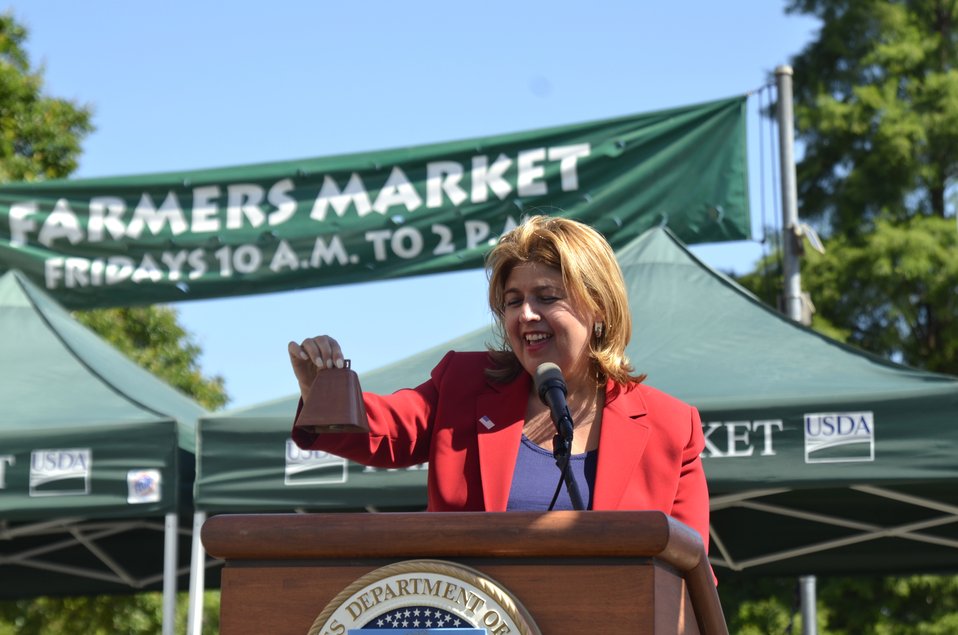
U.S. Department of Agriculture (USDA) Agricultural Market Service (AMS) Administrator Anne Alonzo rings the bell to open USDA’s 2014 Farmers Market in the east parking lot of USDA in Washington, D.C. on Friday, Jun. 6, 2014.